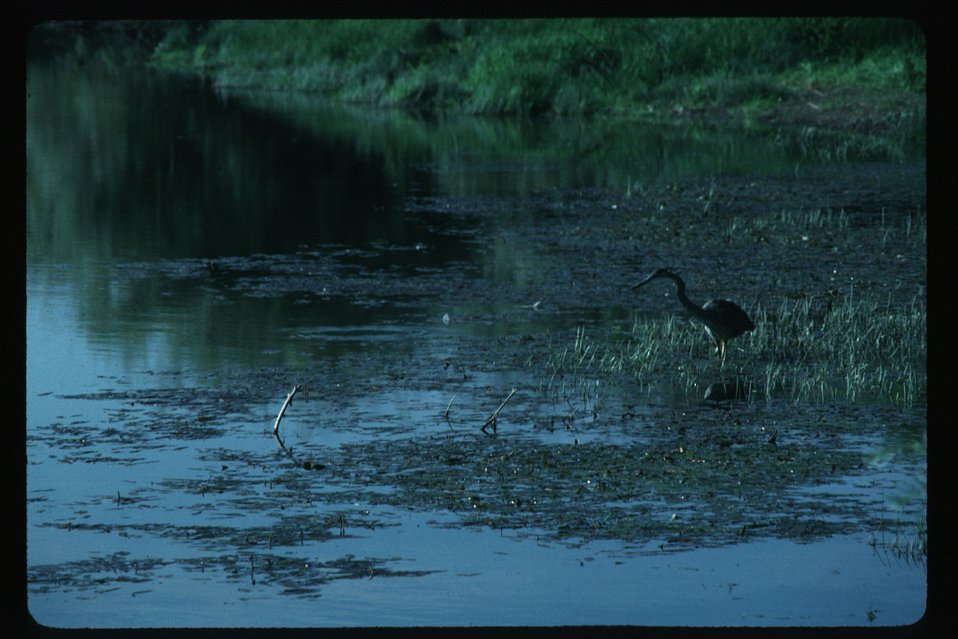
Crane in water Wildlife USRD Upper Snake River District